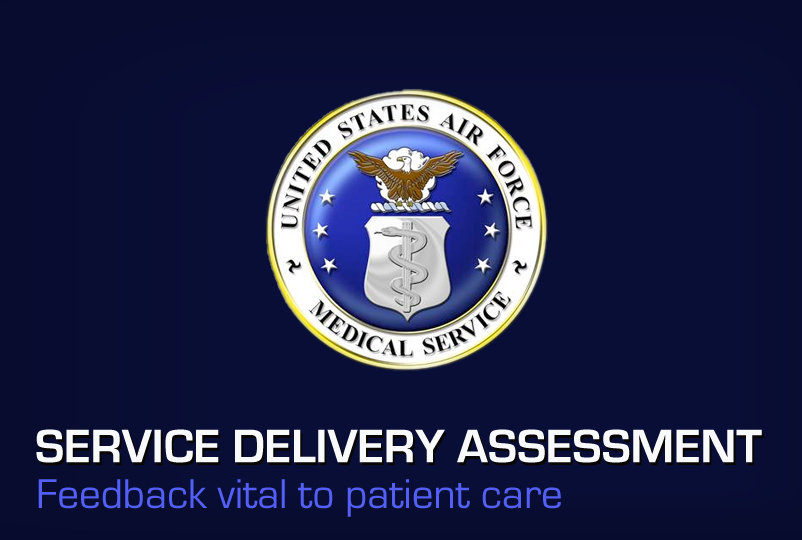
Service Delivery Assessment